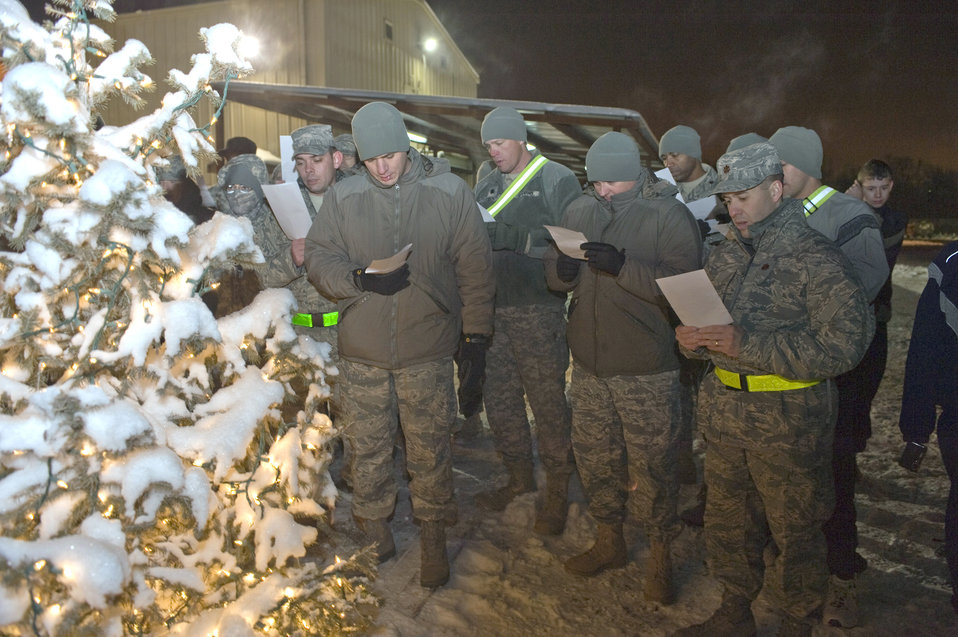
Frosty tree lighting

In sub-zero temperatures, U.S. service members sing holiday songs at the tree-lighting ceremony Dec. 4, 2010, at the Transit Center at Manas, Kyrgyzstan.